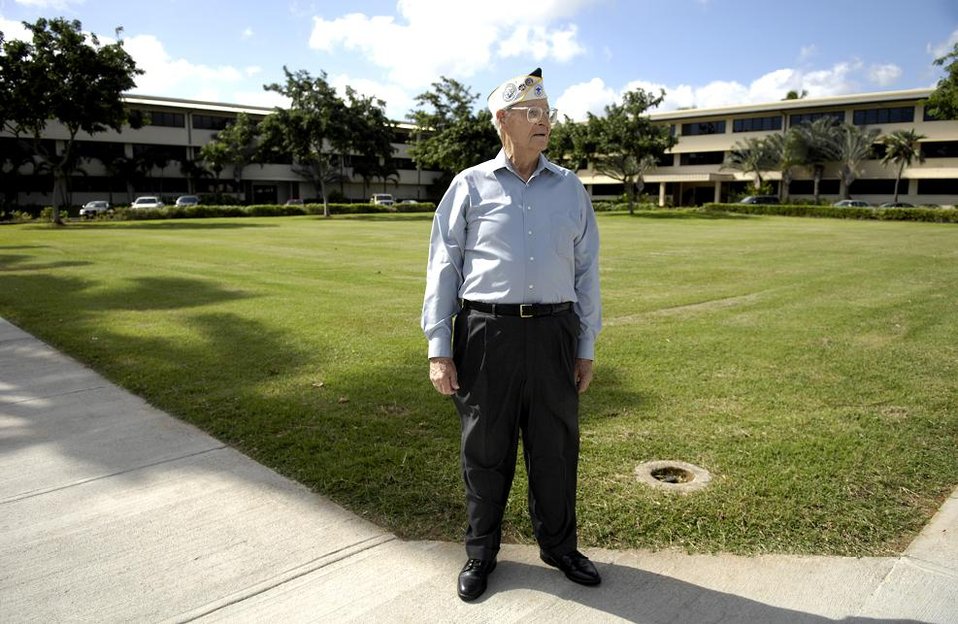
Retired Chief Master Sgt. Ralph Barnett stands in front of the Pacific Air Forces Headquarters building Dec. 4 at Hickam Air Force Base, Hawaii. The PACAF building was a consolidated barracks that then Sgt. Barnett lived in when it was attacked by the Japanese Dec. 7, 1941. Sergeant Barnett was the assistant armament chief for the 23rd Bombardment Squadron assigned to Hickam Field.